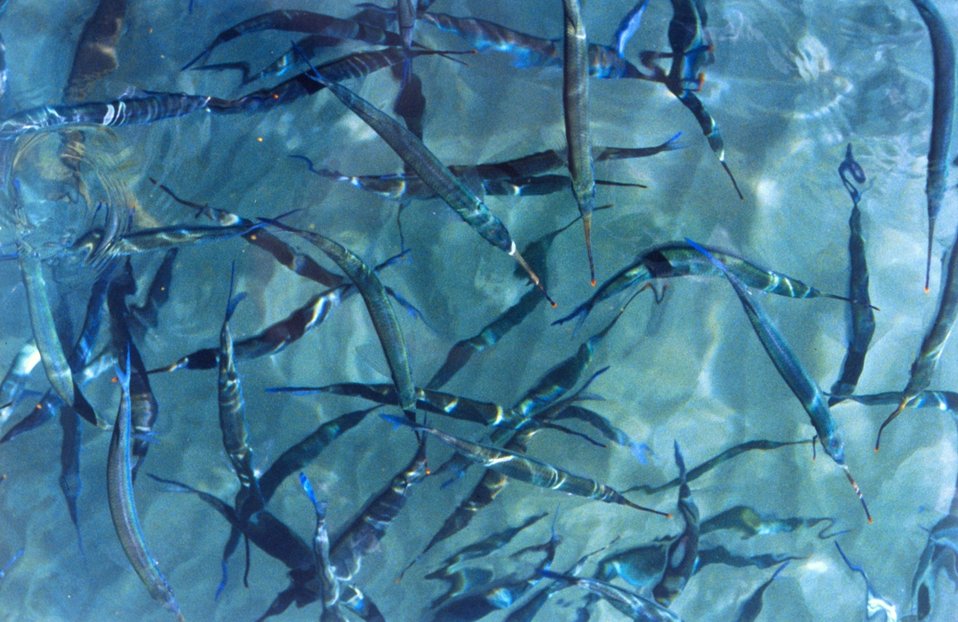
Needlefish at Ali Wai Yacht Harbor.